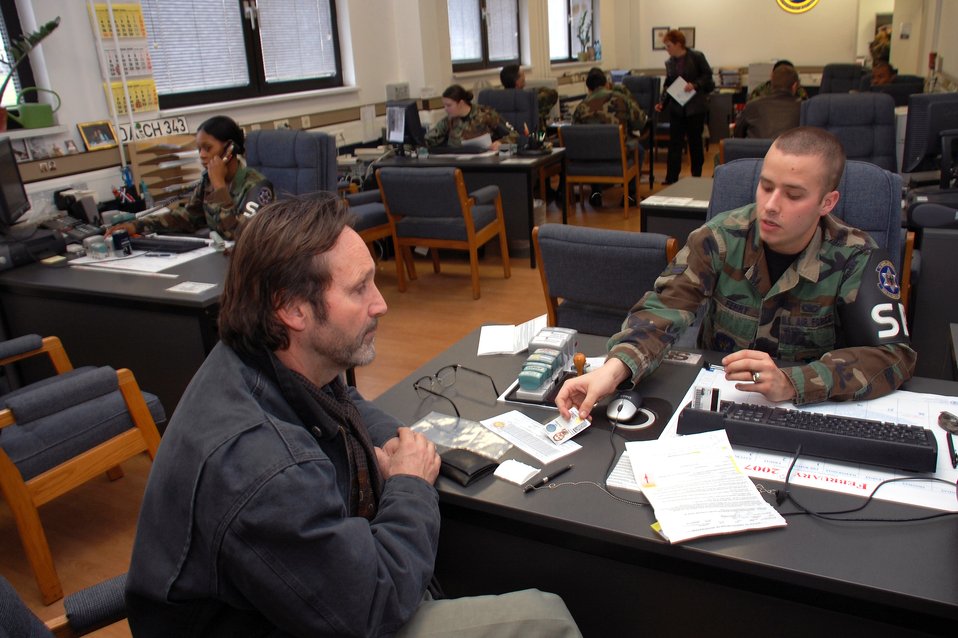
Vehicle registration streamlines customer service

Grant Hrushka speaks with Airman 1st Class Alan Ferry in the vehicle registration office Feb. 1 at Kaupaun Air Station, Germany. The vehicle registration team serves approximately 50,000 people, including Mr. Hrushka who is a Department of Defense Dependent Schools teacher.